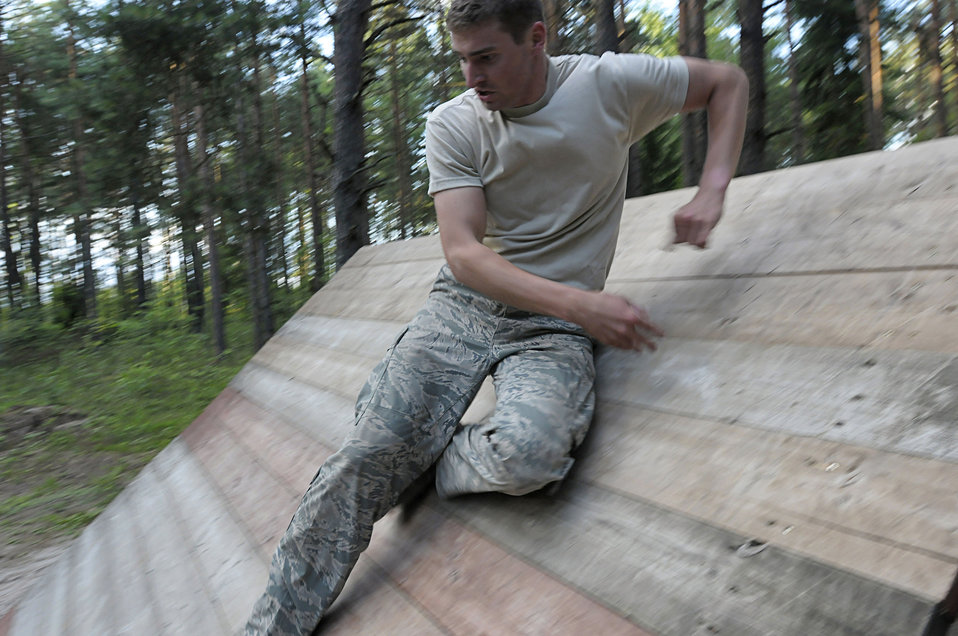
Allied Strike 2011

Airman 1st Class Anthony Abel participates in an obstacle course competition June 23, 2011, as part of Allied Strike at Grafenwoehr Training Area, Germany. Airman Abel is assigned to the 2nd Air Support Operations Squadron.